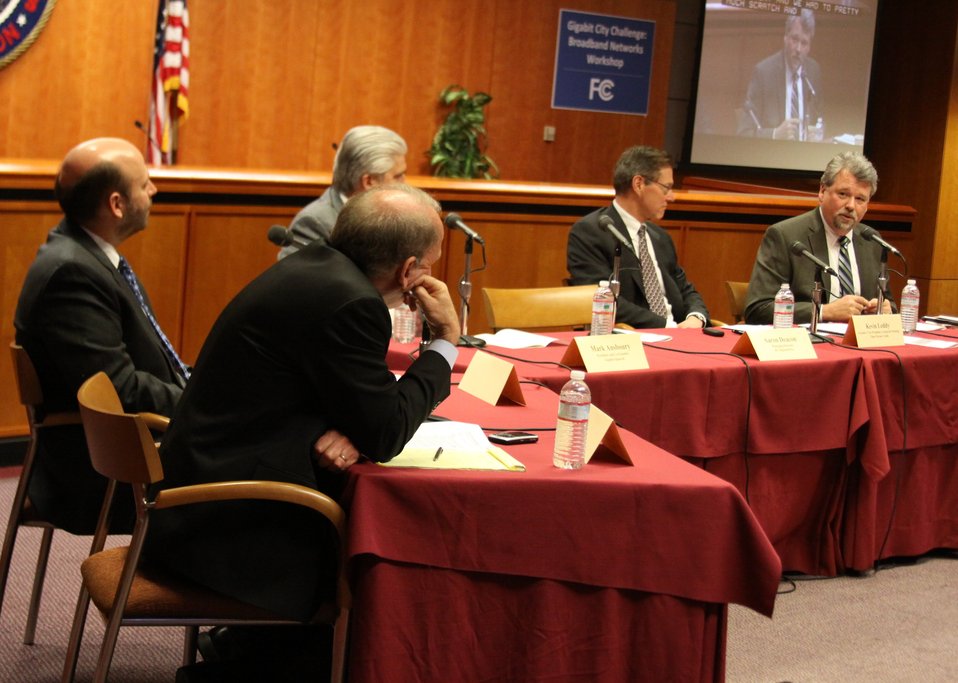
March 27, 2013 Gigabit City Challenge: Broadband Networks Workshop Panel 3: Innovation in Demand Aggregation